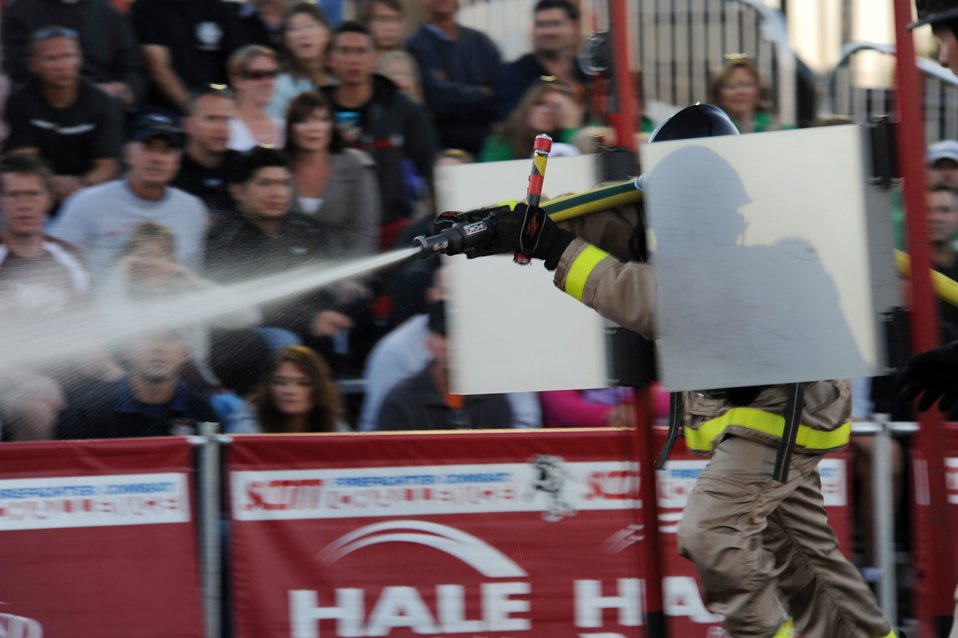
Academy firefighters win 3 world titles

Anthony